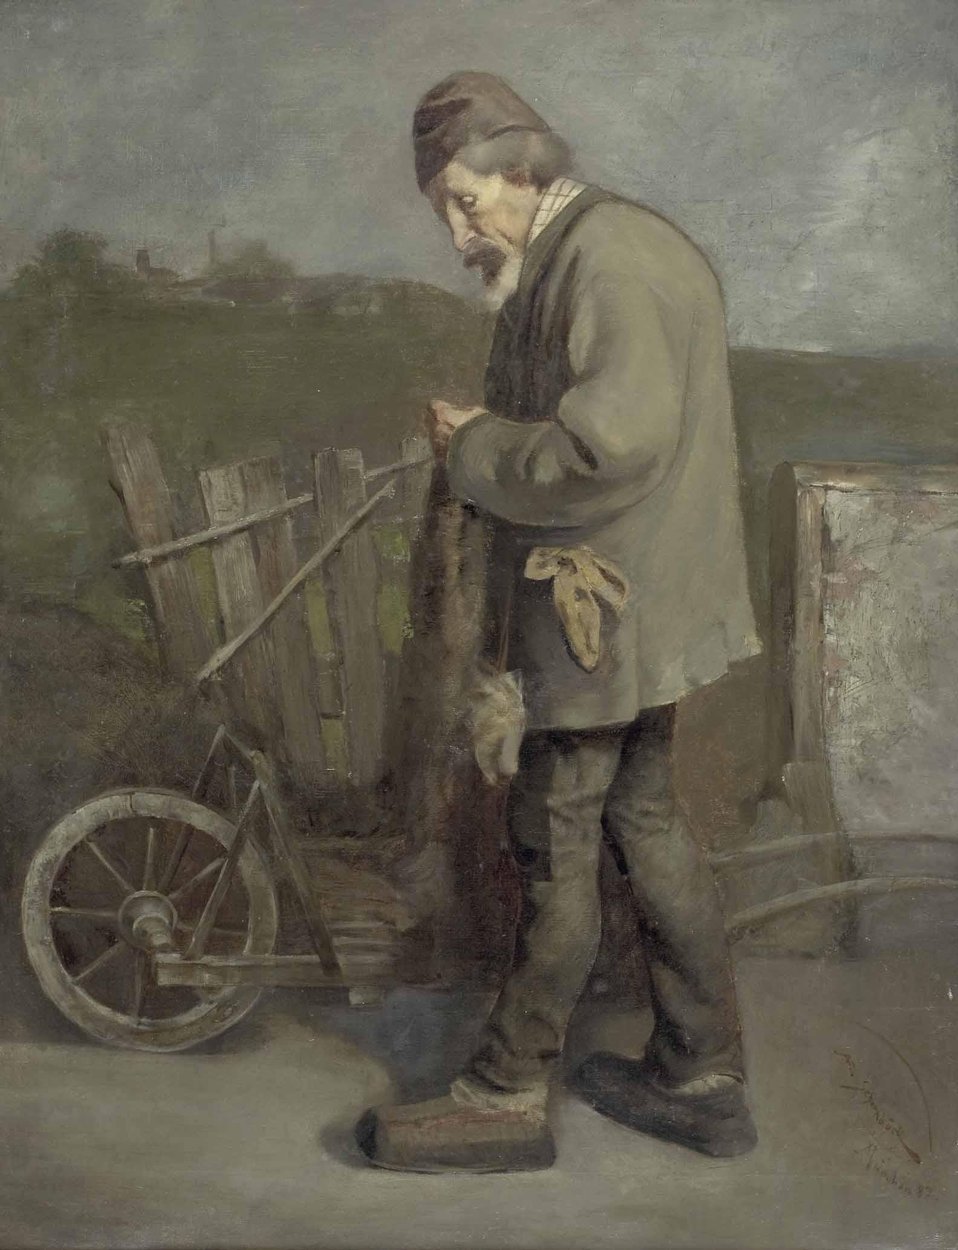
'Älterer Herr mit Schubkarre und Jutesack', unten rechts signiert und datiert: Al. Schornböck, München (18)87, Öl auf Leinwand, ca. 90 x 68 cm